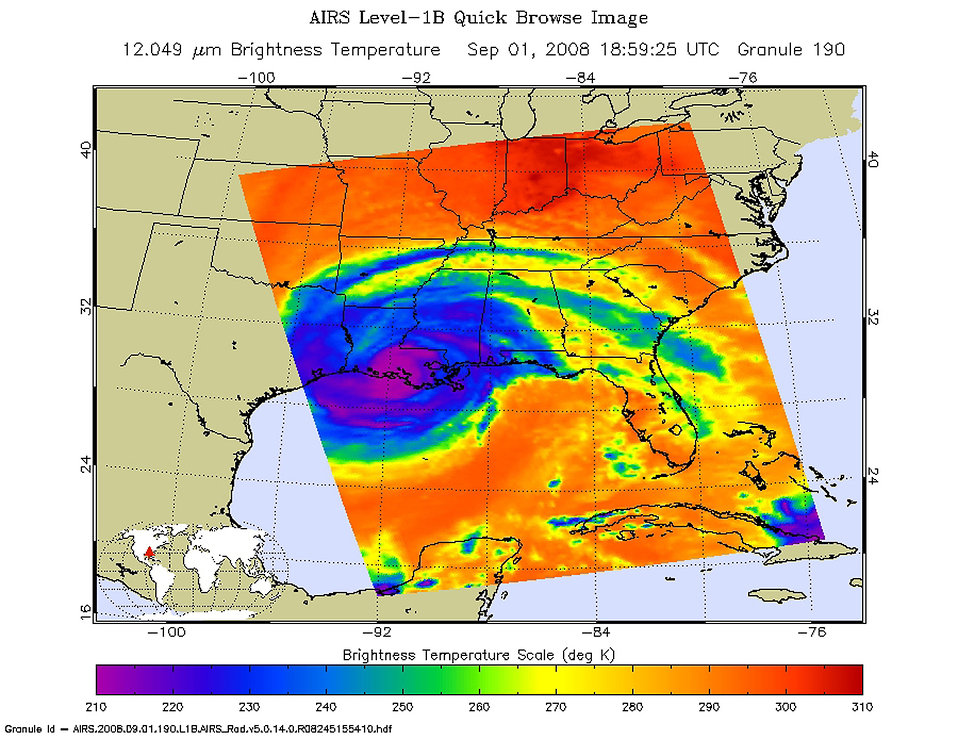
This Sept. 1 afternoon infrared image from NASA's Aqua spacecraft shows Hurricane Gustav about four hours after the Category Two storm slammed into the Louisiana coast, Sept. 1, 2008.